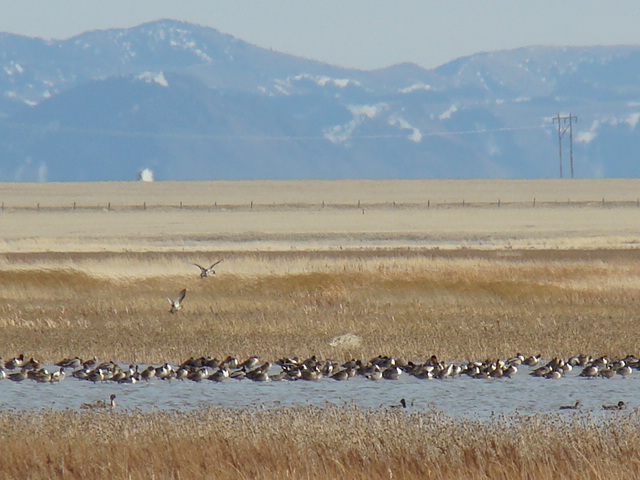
Mallards and pintails during spring migration

The lands of the refuge were established to protect and provide habitat for migratory birds that cross State lines and international borders and are by law a Federal trust responsibility.
The refuge is of great value to waterfowl and shorebirds, as well as other migrating water-dependent bird species, because of the diversity of wetland and upland habitats that provide for the diverse life cycle needs of these species.